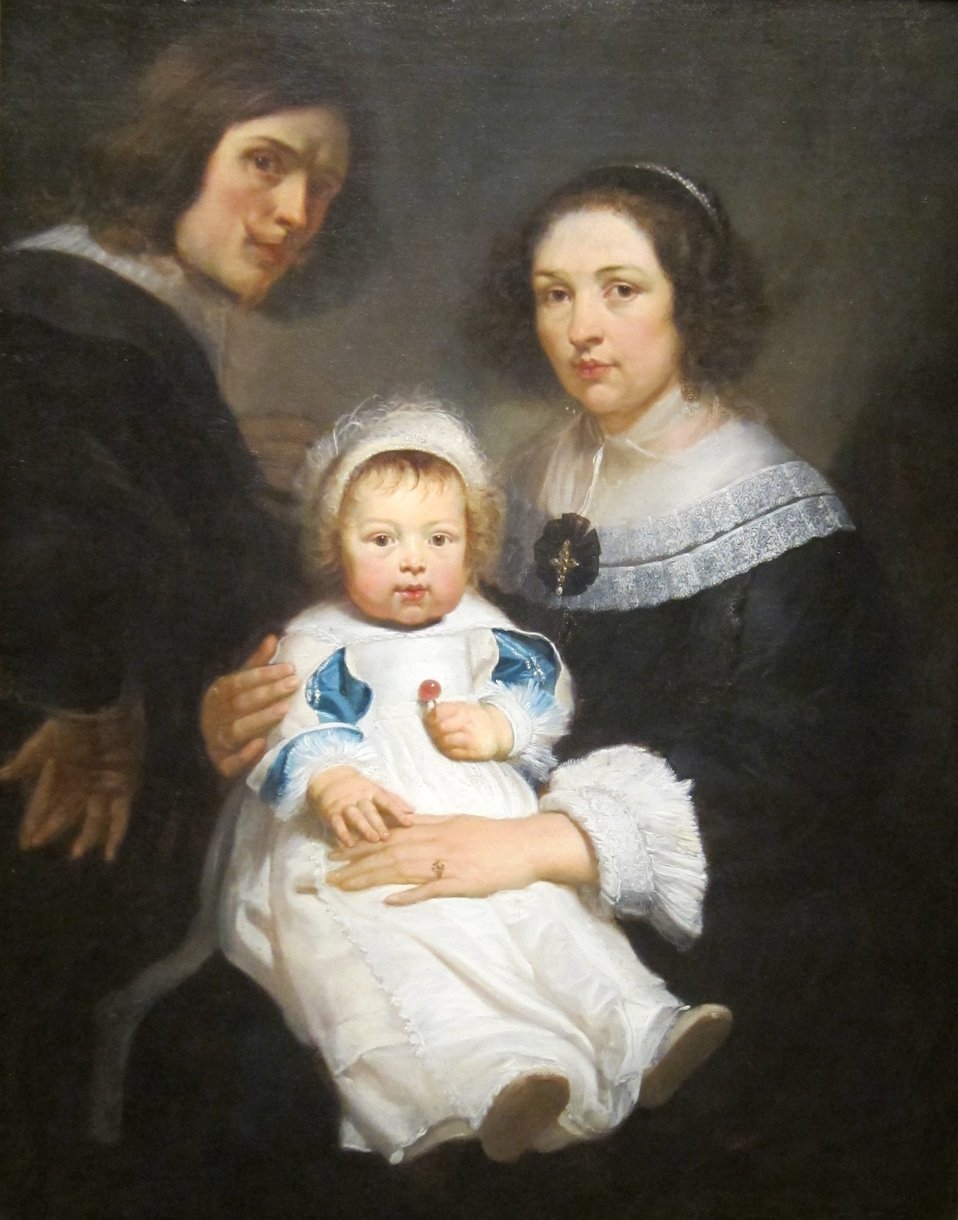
'Self-portrait with his Wife Catherina de Hemelaer and Son Jan Erasmus Quellinus' by Erasmus II Quellinus